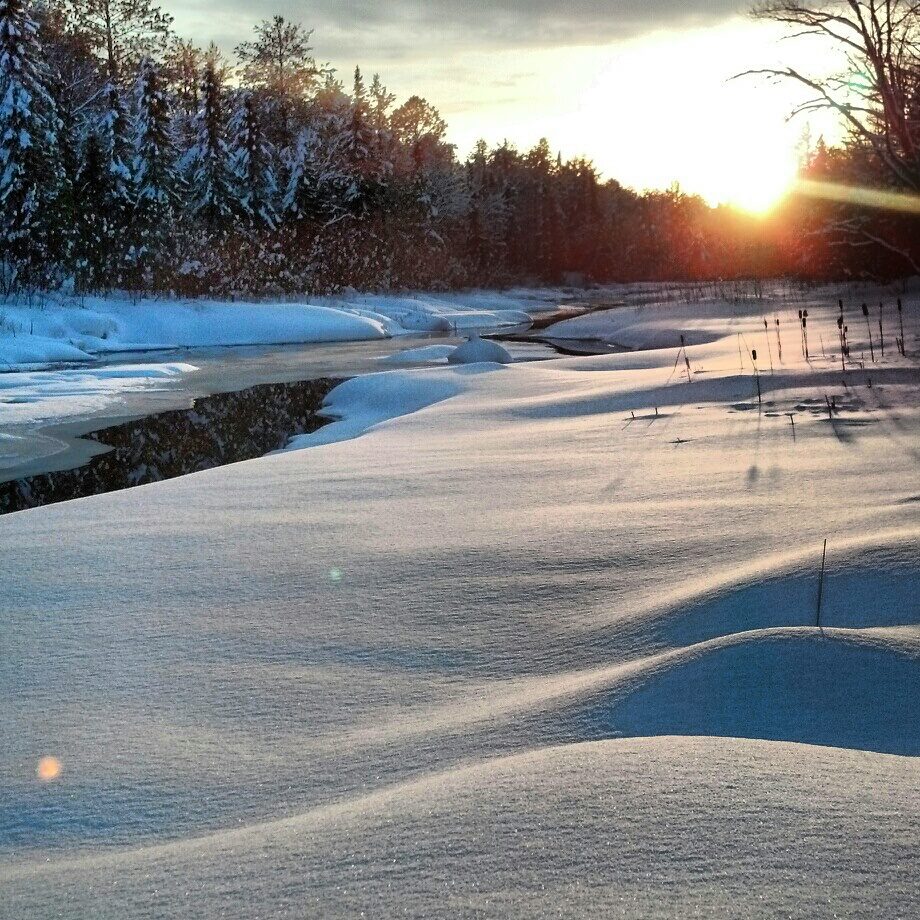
Bayou Pond

The sun sets over Bayou Pond, located along Lakeshore Drive towards Pendills Creek National Fish Hatchery